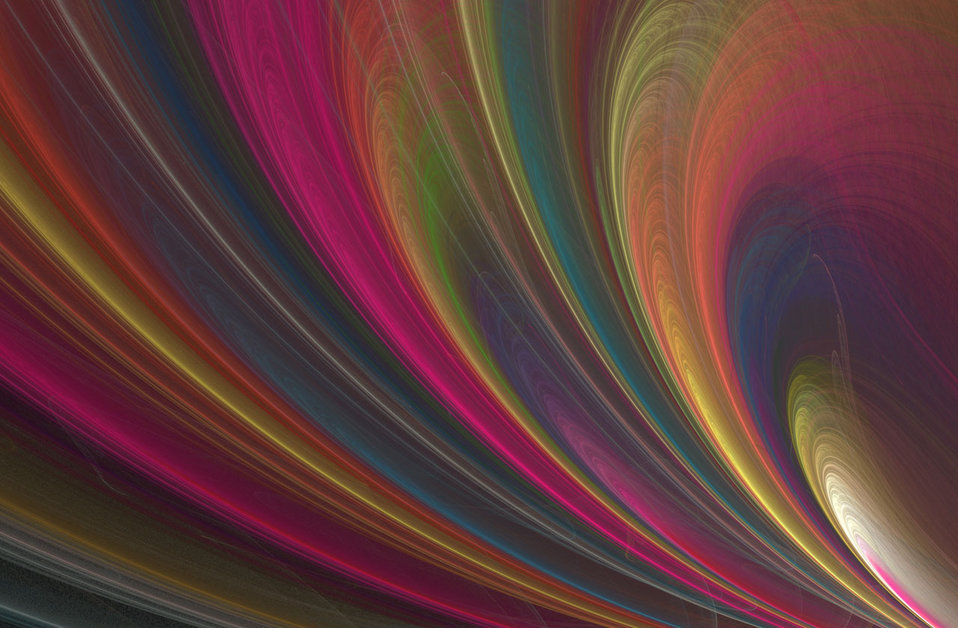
Fractal curve

Abstract computer generated pattern of curving lines.